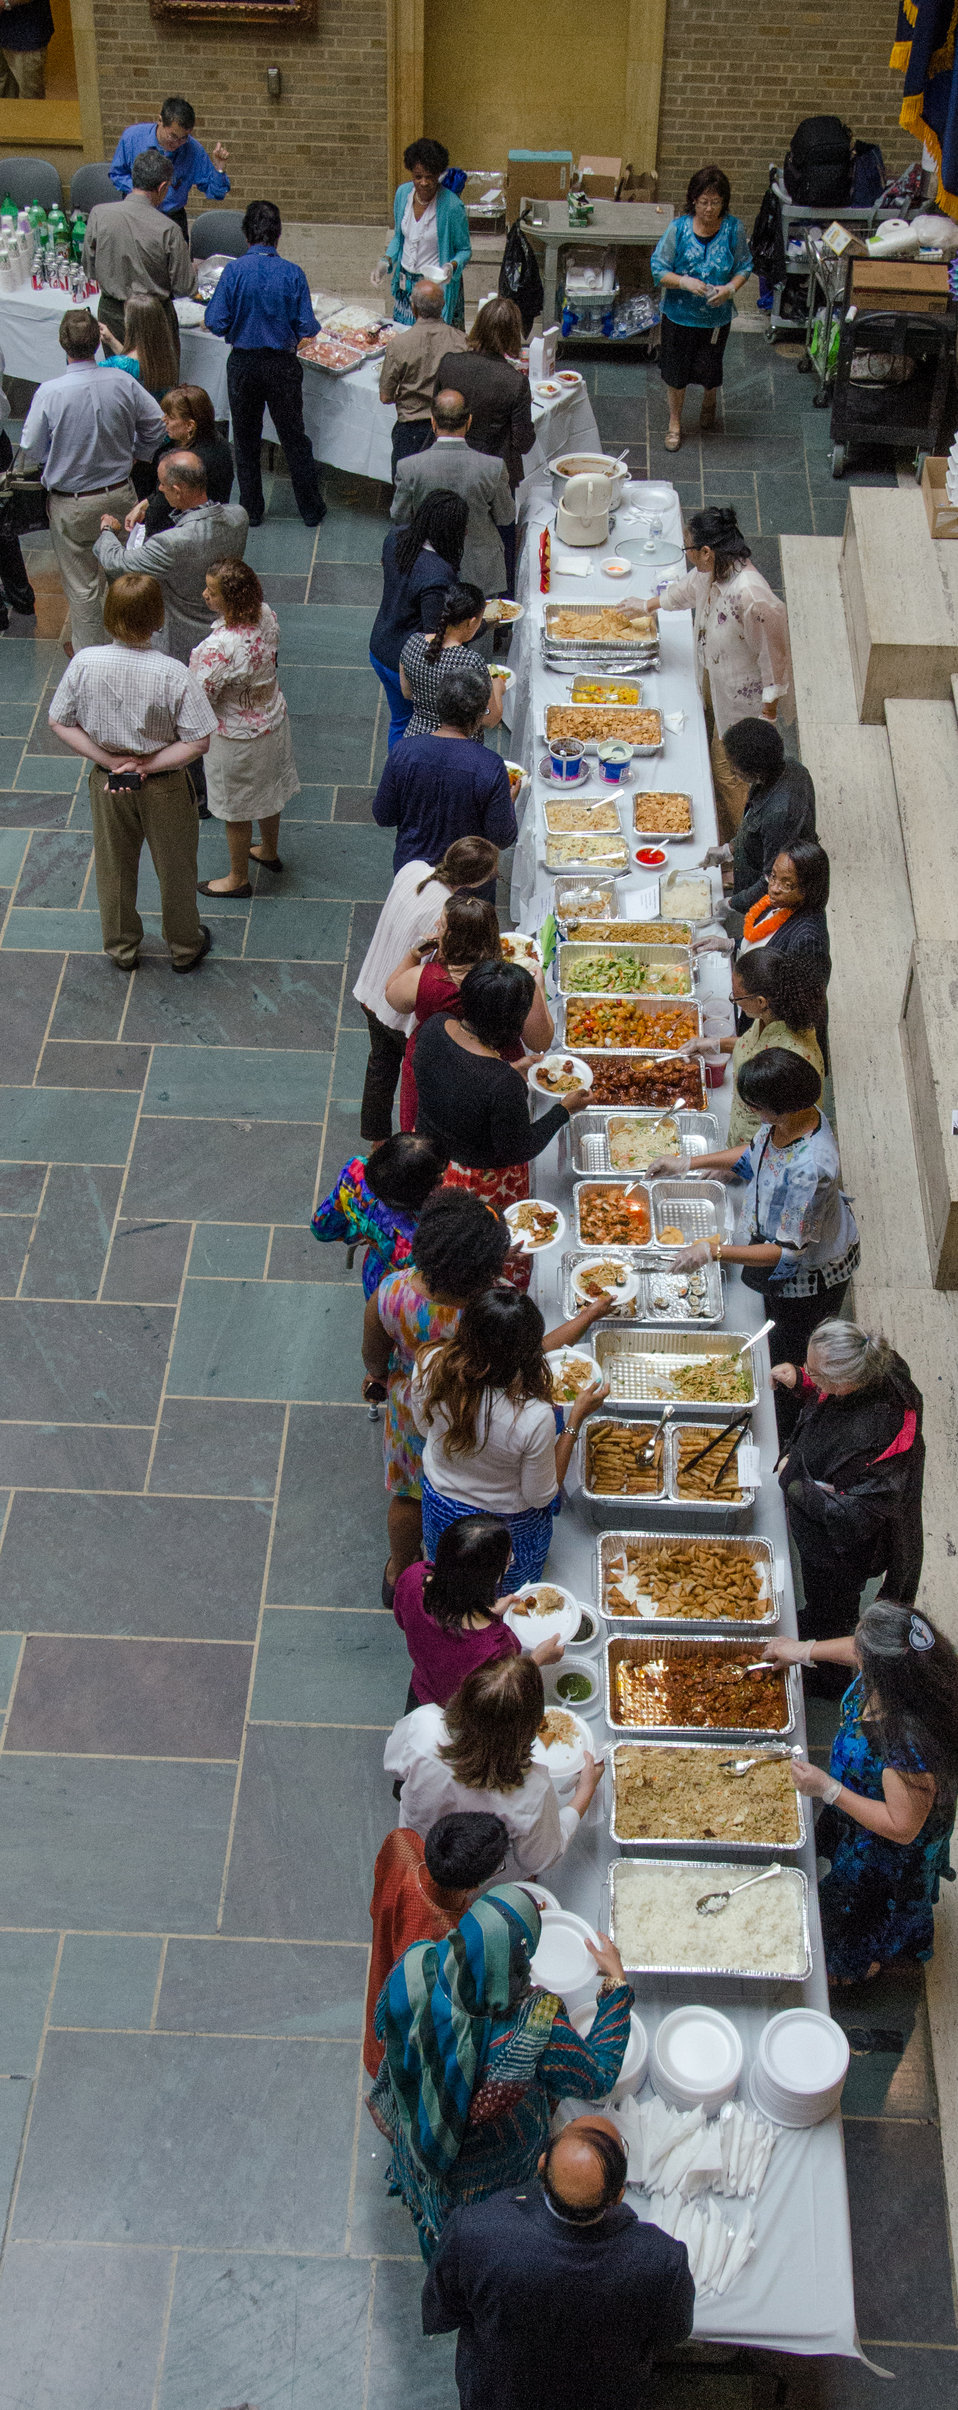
A long line forms for a taste of a dozen different Asian and Pacific Islander foods during the U.S. Department of Agriculture’s (USDA) Asian Pacific American Heritage Month Observance, at the USDA headquarters in Washington, D.C., on Thursday, May 23, 2013. This year’s theme is “Building leadership; Embracing the Cultural Values and Inclusions.”